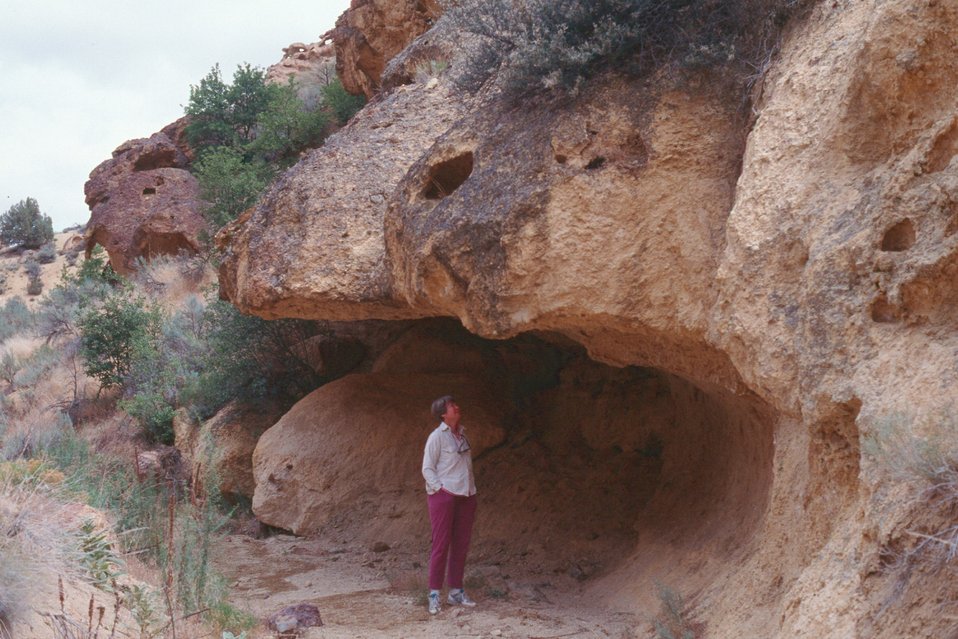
Leslie Gulch Owyhee Field Office LSRD Lower Snake River District